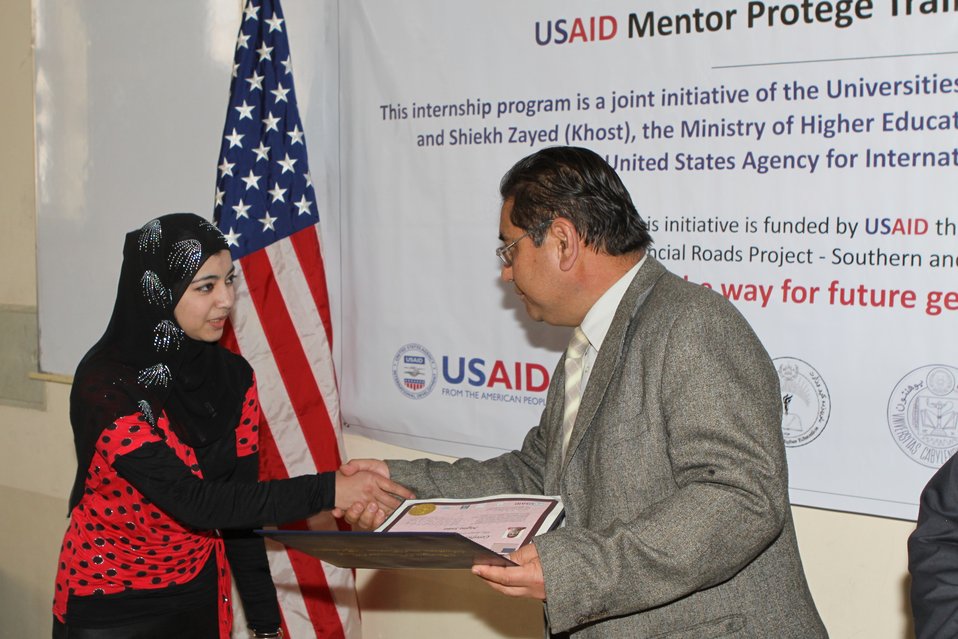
Female University Students Complete Internship

Kabul, Afghanistan | March 16, 2011 – In response to a demand for qualified Afghan engineers, Kabul University celebrated completion of an intensive five-month Mentor Protégé Training Program today by 10 female fourth year university students. The Training Program is a joint effort between the Government of the Islamic Republic of Afghanistan, the U.S. Agency for International Development (USAID), and the Universities of Kabul, Kandahar, Alberoony in Kapisa, Shiekh Zayed in Khost. The graduation ceremony highlighted collaboration with these national institutions in building the technical skills of young Afghans, made possible by USAID.

Four of the interns are engineers, while the remaining six are from the faculties of computer science, economics, and psychology.

Speaking about the event, H.E. Minister of Public Works Abdul Qudus Hamidi said, “The future of Afghanistan lies in developing the skills of our youth, and the engineering skills of these graduates today represent a small but important step forward for the country.”

Keynote speakers at the ceremony included H.E. Deputy Minister of Higher Education Abdul Rahim; USAID Senior Deputy Mission Director Robert Hellyer; and Chancellor of Kabul University Professor Hamidullah Amin. Approximately 150 people, including current and former students attended the graduation.

Launched last year, the Mentor Protégé Training Program has provided qualifying students the opportunity to intern with USAID’s Strategic Provincial Roads-South and East Afghanistan project and gain practical experience in a real work environment. The goal of the program was to offer interns the opportunity to gain hands-on experience to reinforce their formal studies. A total of 30 students from four national universities have benefitted from this program.

“The promotion of women’s rights is integrated into the overall U.S. Government development strategy and can be found in key programs, including education, healthcare, security, rule of law, political participation, agriculture, and economic development,” said Robert Hellyer. “The U.S. Government is committed to the Afghan leadership of programs that directly enhance development, particularly as it relates to women’s issues.”

This event also highlighted the learning achievements of students and emphasized the importance of hands-on internship programs. The curriculum is designed to instill students with the knowledge and confidence to qualify for engineering positions upon completion of their fourth year at their respective universities.